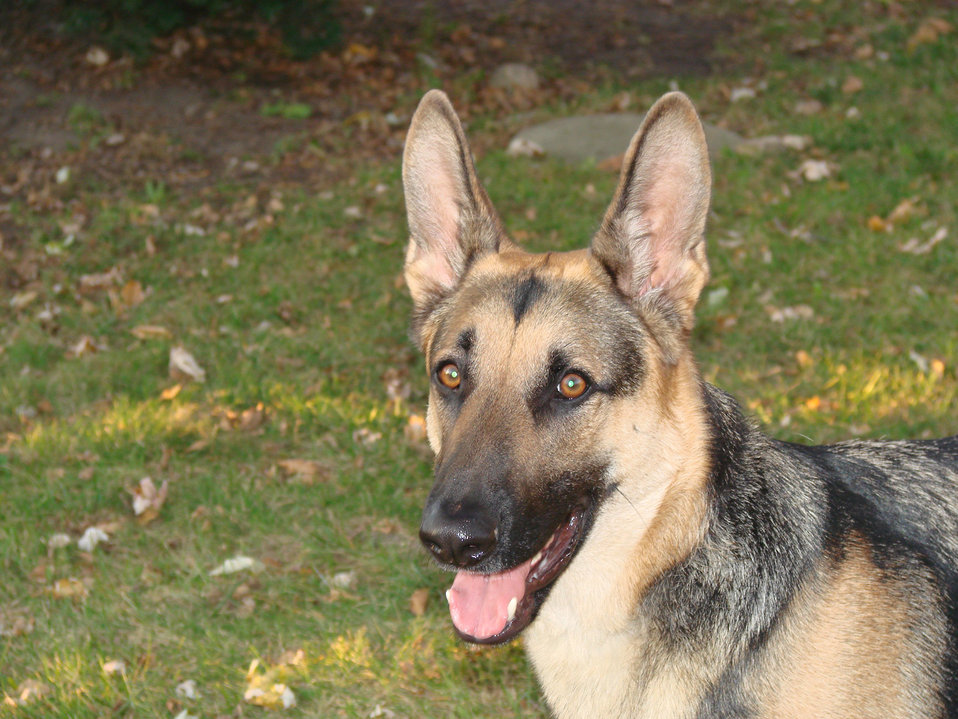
German shepherd outside on a summer evening..